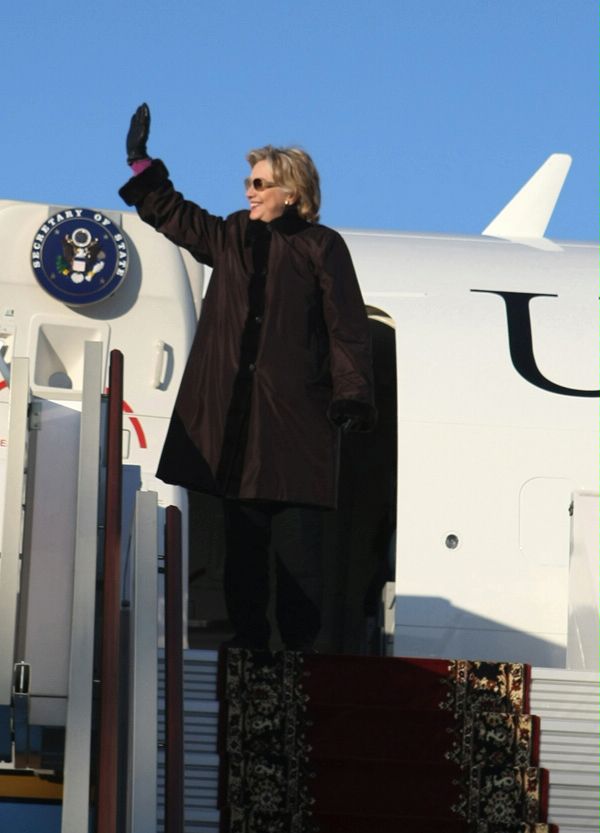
Secretary Clinton is 'Wheels Down' in Moscow

U.S. Secretary of State Hillary Rodham Clinton is 'Wheels Down' in Moscow, Russia, March 18, 2010.